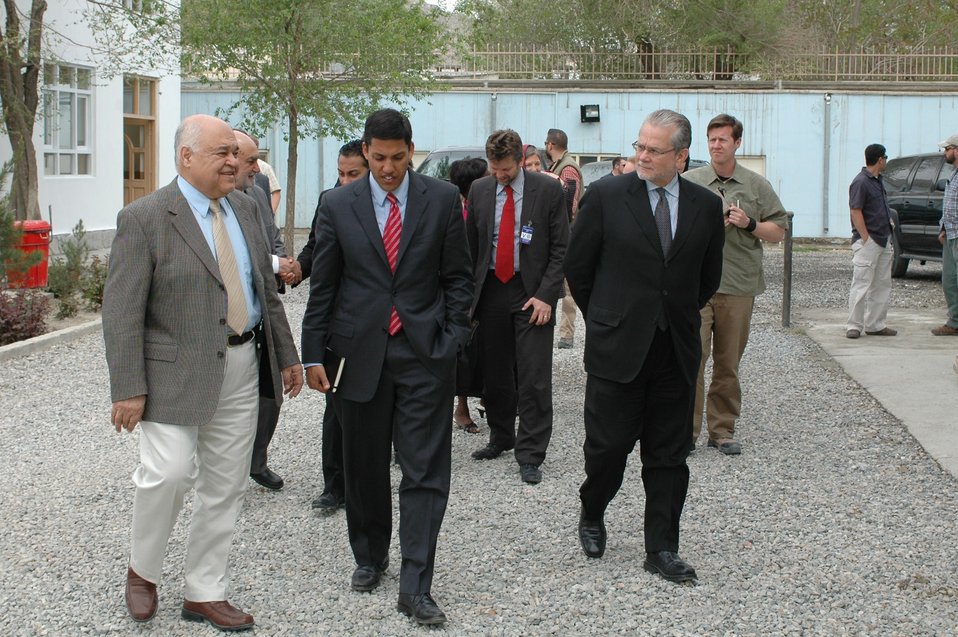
Dr Shah Visits Votech in Kabul